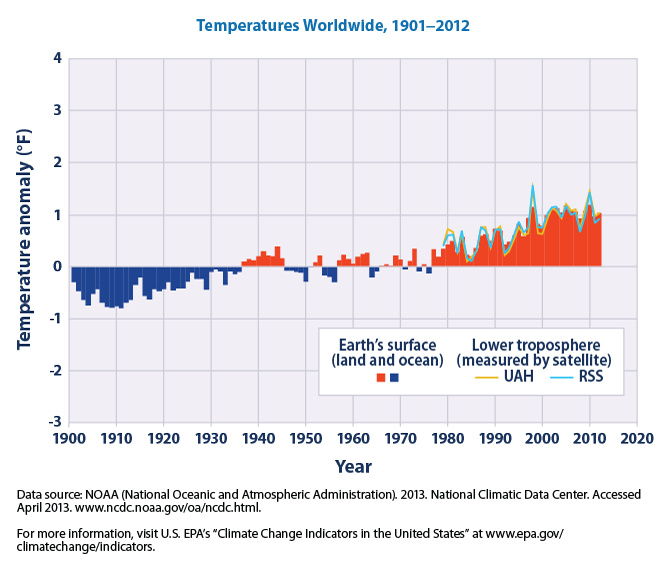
Climate Change Indicators - Temperatures Worldwide

Worldwide, 2001-2010 was the warmest decade on record since thermometer-based observations began. Learn more in our Climate Change Indicators Report: www.epa.gov/climatechange/ indicators/weather-climate/temperature.html